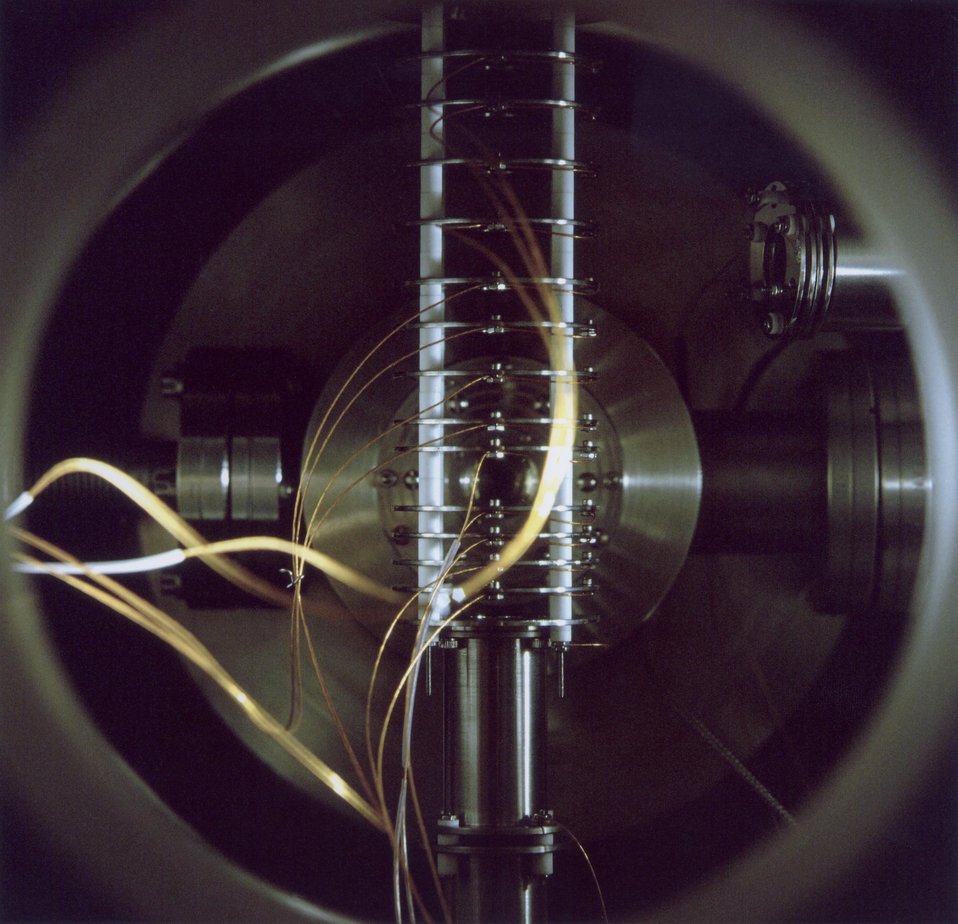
ION GAUGE USED BY SCIENTISTS AT AMES.
THIS ION GAUGE MONITORS THE QUALITY OF THE VACUUM IN THE HIGH RESOLUTION VACUUM ULTRAVIOLET LASER SYSTEM USED TO MEASURE PHOTOIONS AND PHOTOELECTRONS.